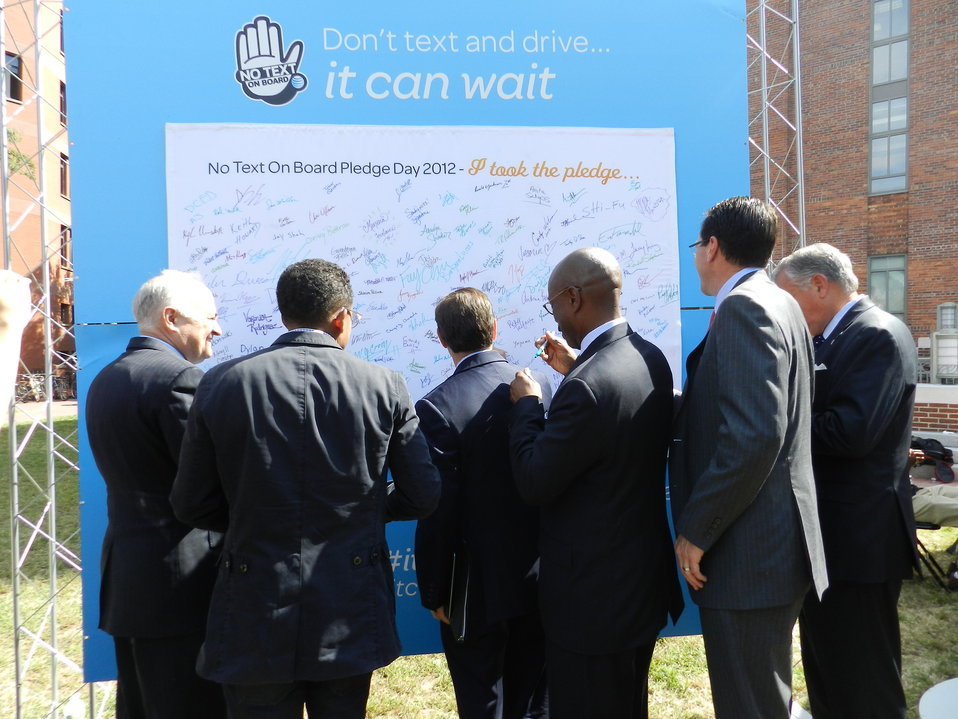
It Can Wait Pledge Day 9.19.12

Signing the pledge board at the ‘No Text On Board’ Pledge Day Event, The George Washington University, Washington, D.C. September 19, 2012